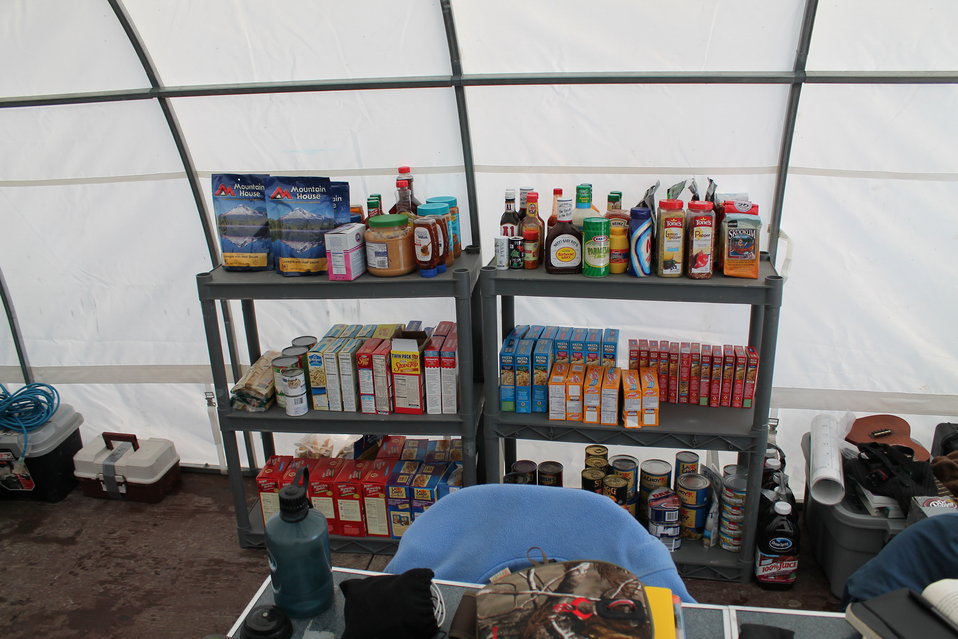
The Essentials

Having enough food to support a crew of 2 or more can be a challenge.

USFWS Yukon Delta NWR